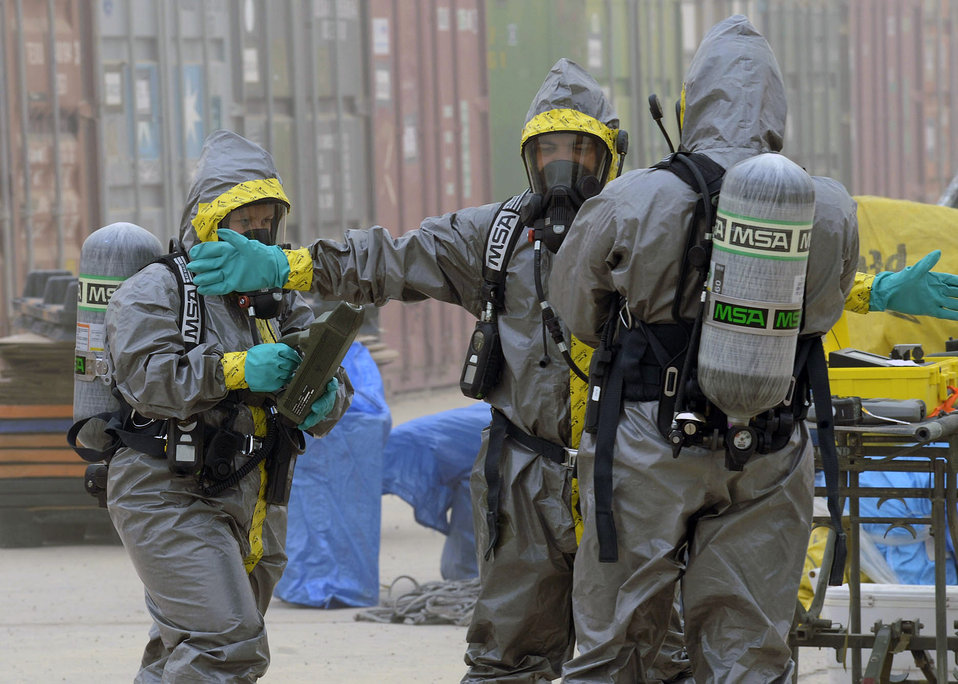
Inspecting the mail

Senior Airman Amanda Heatherly (left) and Tech. Sgt. Joshua Ashby (right) scan Senior Airman Tyrone Fisher to make sure he is free of any hazardous materials at Camp Stryker, Iraq. Airman Fisher was inspecting packages that have left the military postal system, and the other team members were making sure he was clear of contamination. Airman Heatherly is deployed from the Alabama Air National Guard's 117th Air Refueling Wing. Both Sergeant Ashby and Airman Fisher are deployed from the Indiana Air National Guard's 181st Intelligence Wing. All Airmen are assigned to the 447th Expeditionary Civil Engineer Squadron.